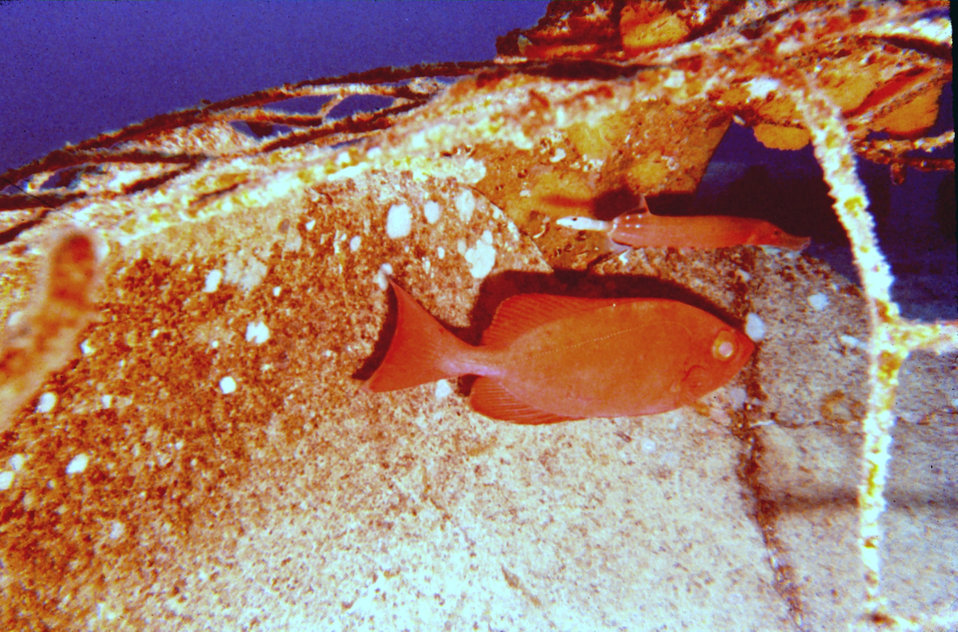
The trumpet fish, Aulostomus chinensis, and big eye, Priacanthus cruentatus (Aweoweo)